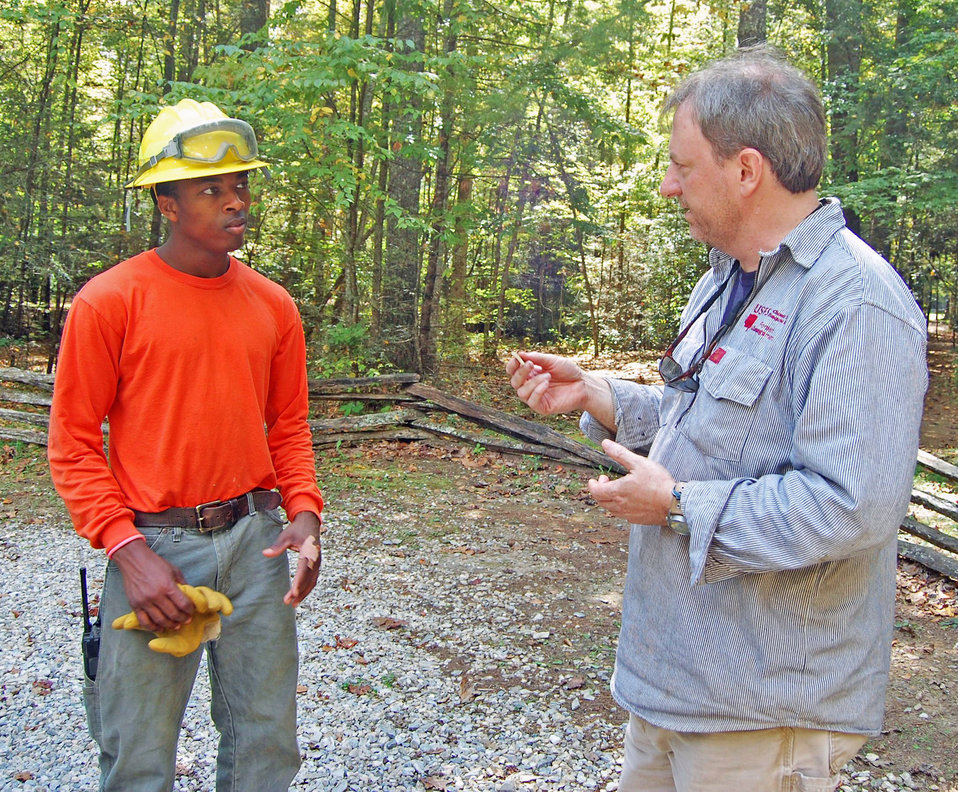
Forest Service Job Corps student Jay Williams learns about pottery found on site from U.S. Forest Service archeologist Andrew Triplett on the Nantahala National Forest in NC on Sept. 29, 2012. As a 0-20 percent slope area, watching for archeological finds was a top priority throughout the project.